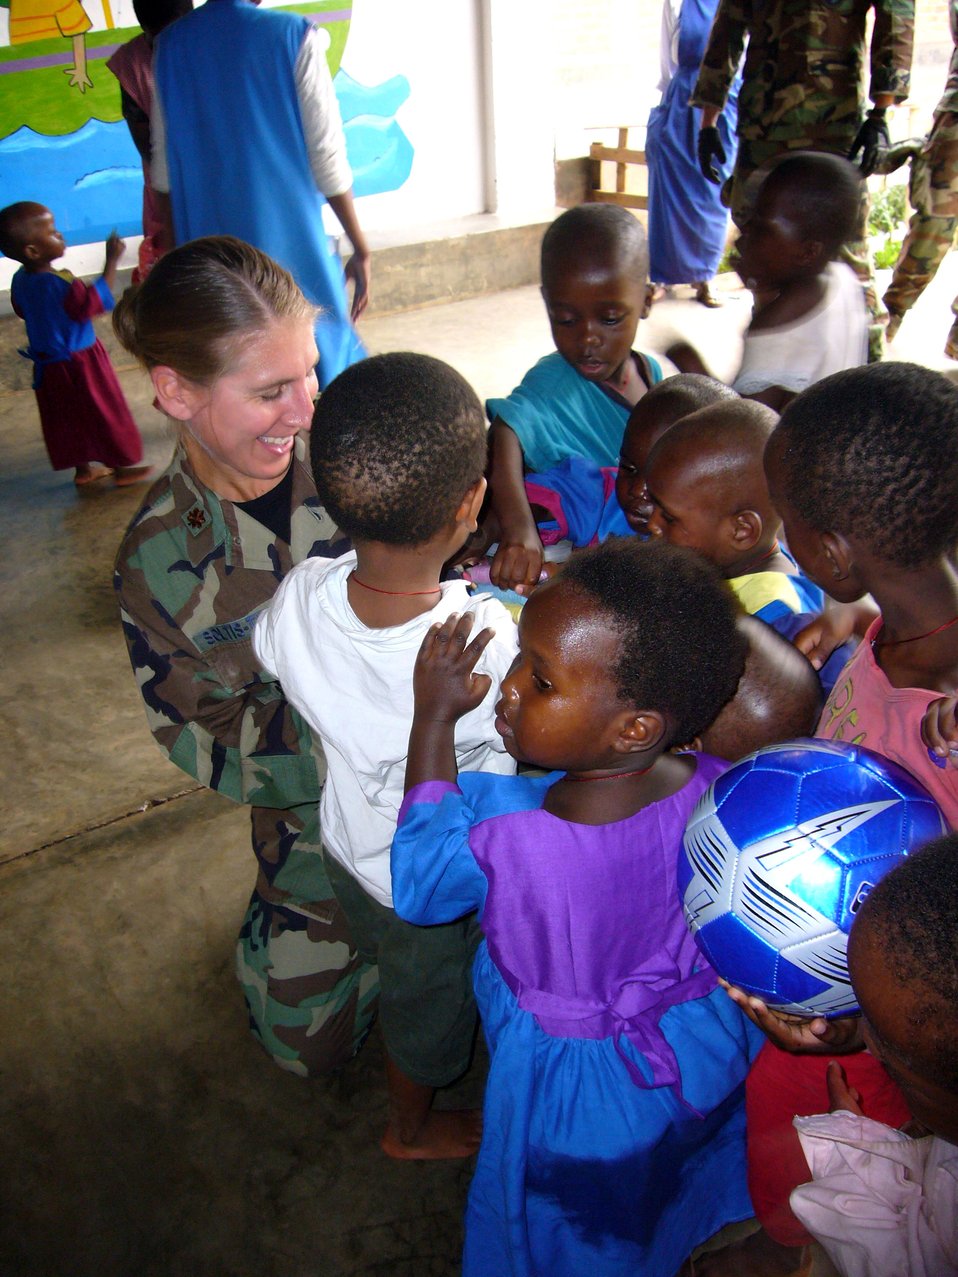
Airmen deliver donations to Rwandan orphanage

Maj. (Dr.) Kristen Soltis-Tyler, 786th Air Expeditionary Squadron flight surgeon, hands out candy to children at an orphanage in Kigali, Rwanda, Oct. 27. Major Soltis-Tyler was part of a group of Airmen who visited the orphanage to donate coloring books, soccer balls and shoes to the children. The Airmen are in Kigali to provide airlift support to the Rwanda Defense Force.